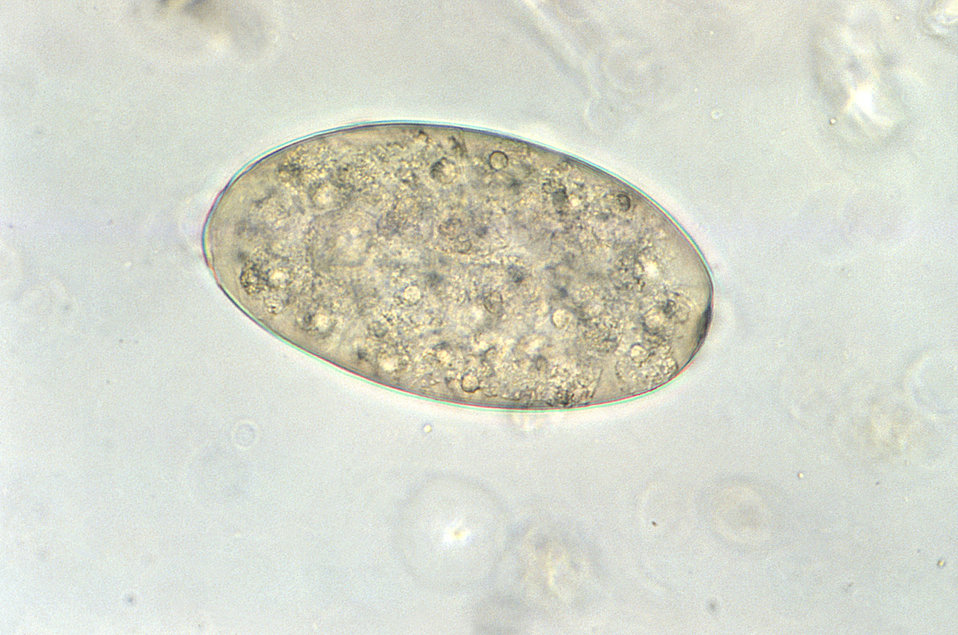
Under a high magnification of 400X, this photomicrograph revealed some of the ultrastructural morphology exhibited by a trematode, Fasciolopsis buski, egg, which is described as broadly ellipsoidal, operculated and measuring 130�m to 150�m long, by 60 �m to 90�m wide. These eggs are unembryonated when passed in feces. The eggs of F. buski can be difficult to distinguish from Fasciola hepatica, although the abopercular end of the latter often has a roughened or irregular area.